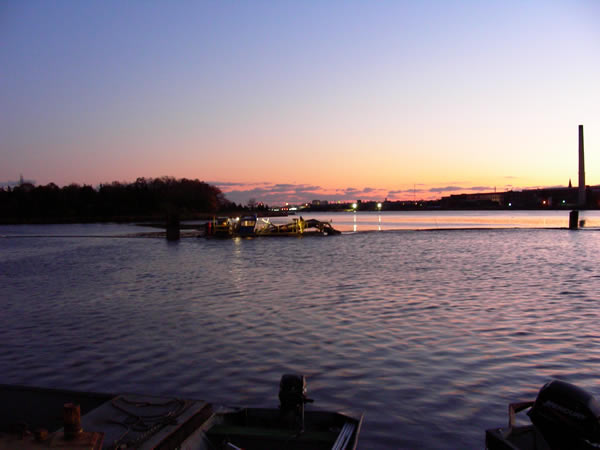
November 2009, Working the longest day possible for a successful season

Lighting allows crews to work 12 hour days into November of 2009.

The 2009 American Recovery and Reinvestment Act supported the New Bedford Harbor Superfund site with additional funding, allowing the project to start months ahead of the typical schedule and continue later into the season until weather no longer permitted.